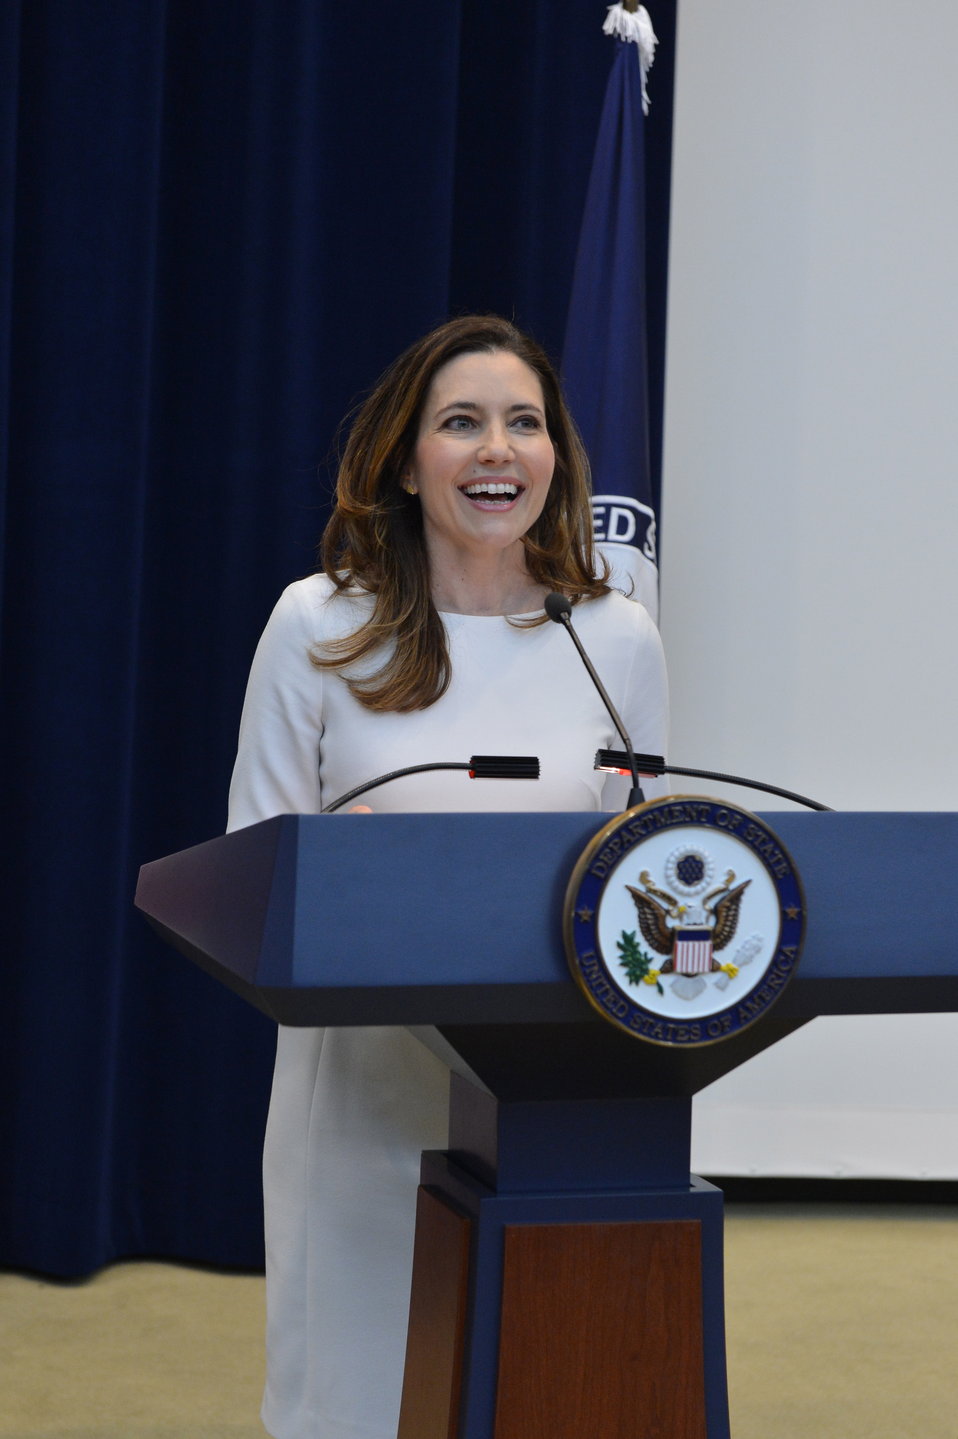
Assistant Secretary Evan Ryan Delivers Remarks at the Kennedy-Lugar Youth Exchange and Study (YES) Program

Assistant Secretary of State for Educational and Cultural Affairs, Evan Ryan delivers remarks at the Kennedy-Lugar Youth Exchange and Study (YES) program in the Dean Acheson auditorium of the U.S. Department of State in Washington, D.C. on June 19, 2014.